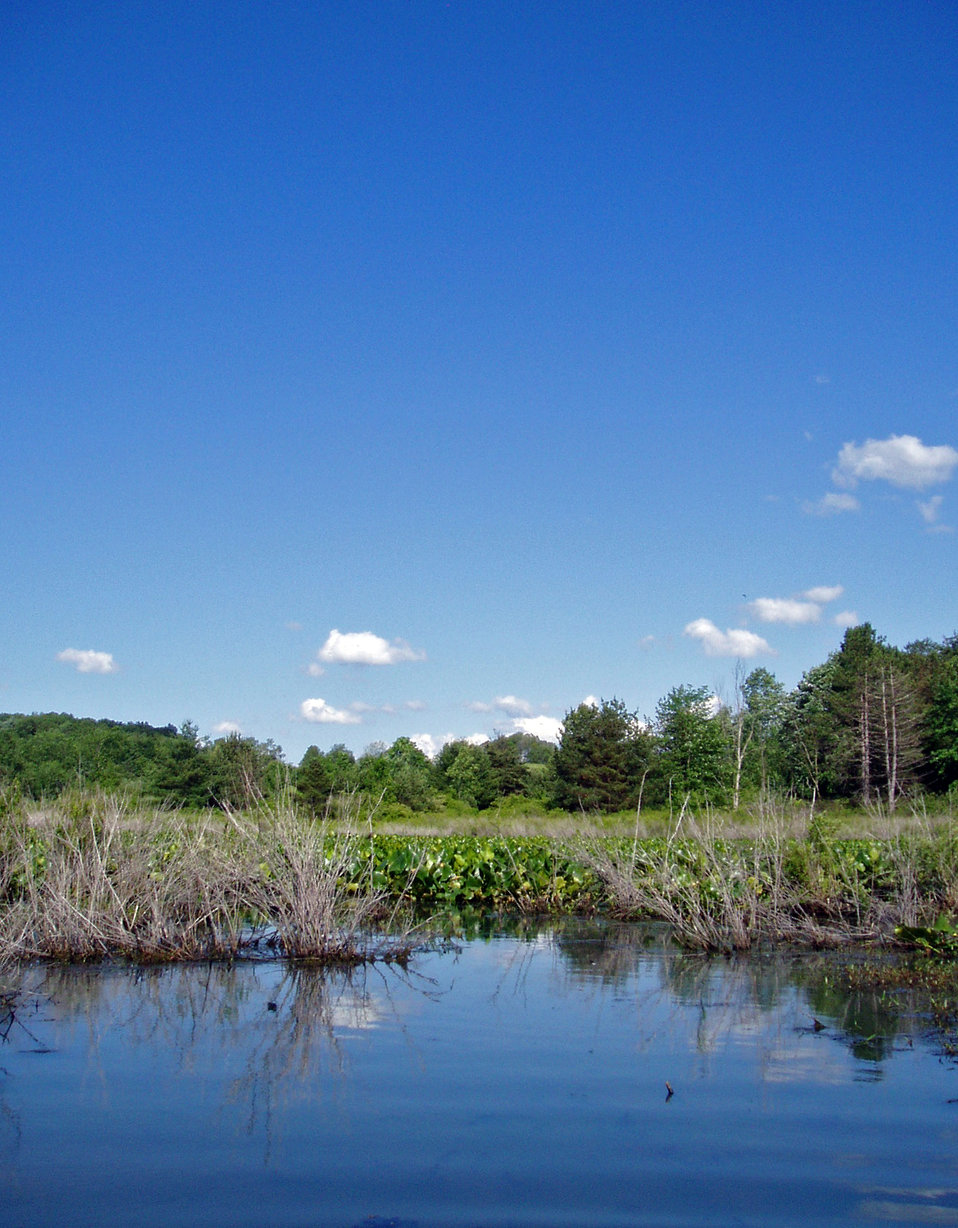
Wetlands

Erie National Wildlife Refuge in Pennsylvania.